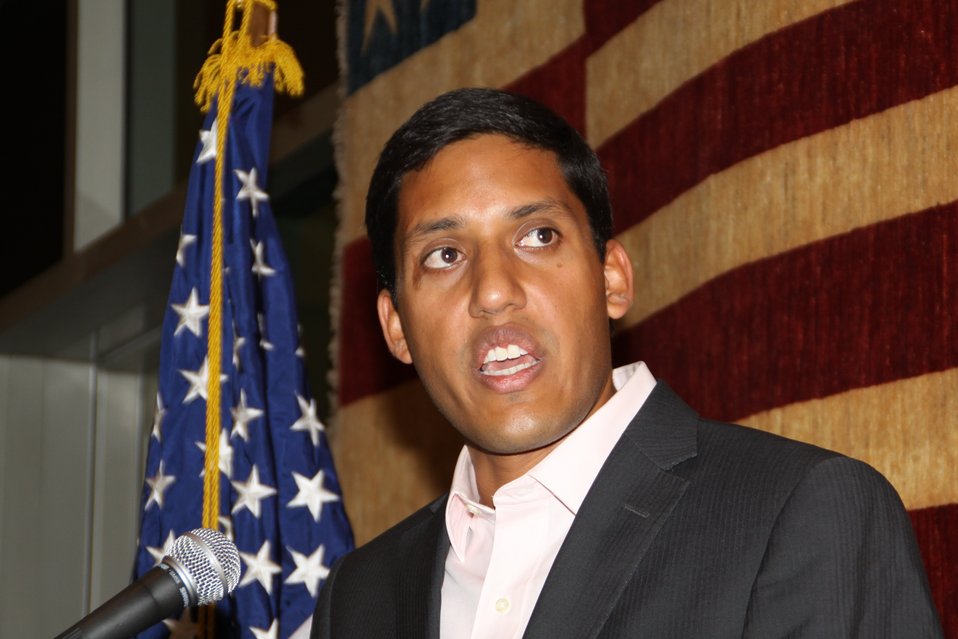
US Embassy Town Hall July 21, 2010